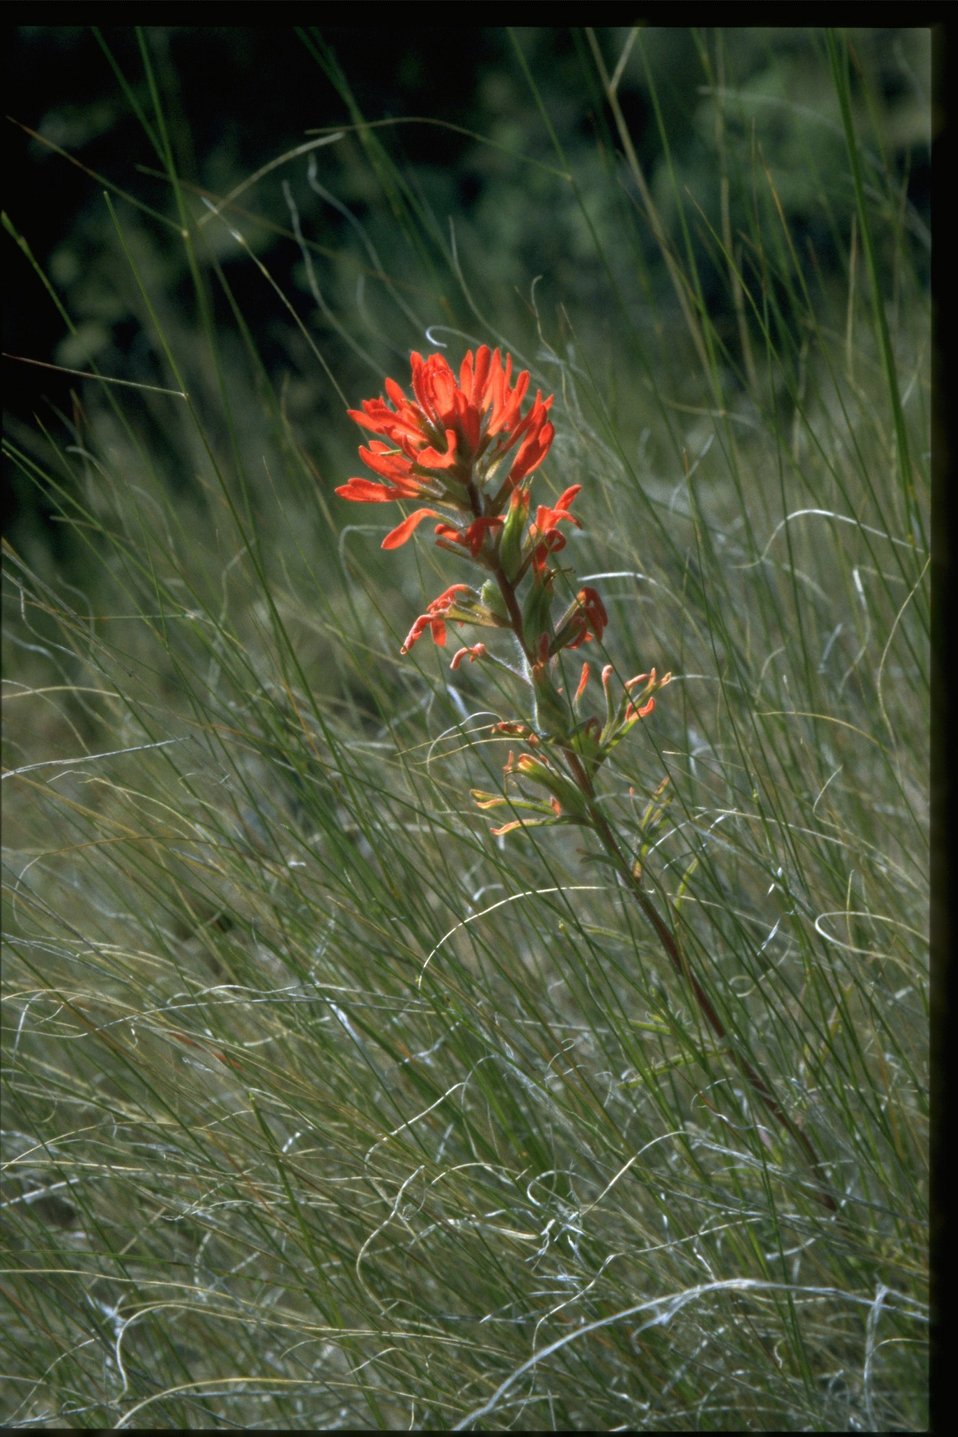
Medium shot of desert paintbrush (Castilleja chromosa).